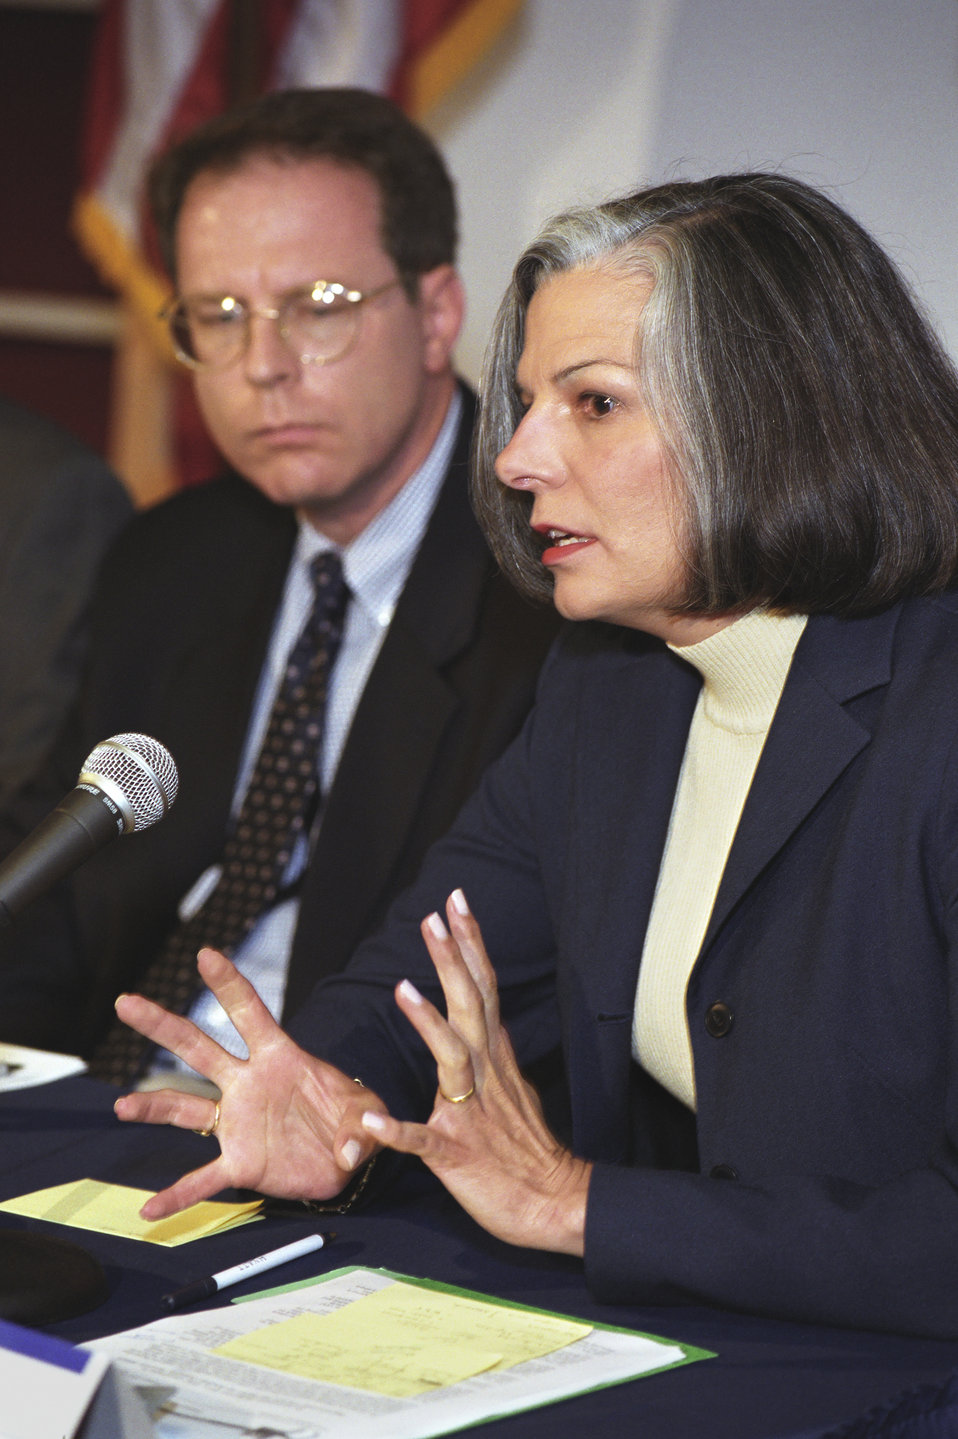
Centers for Disease Control and Prevention Bioterrorism Preparedness Press Briefing, August 27, 2002.